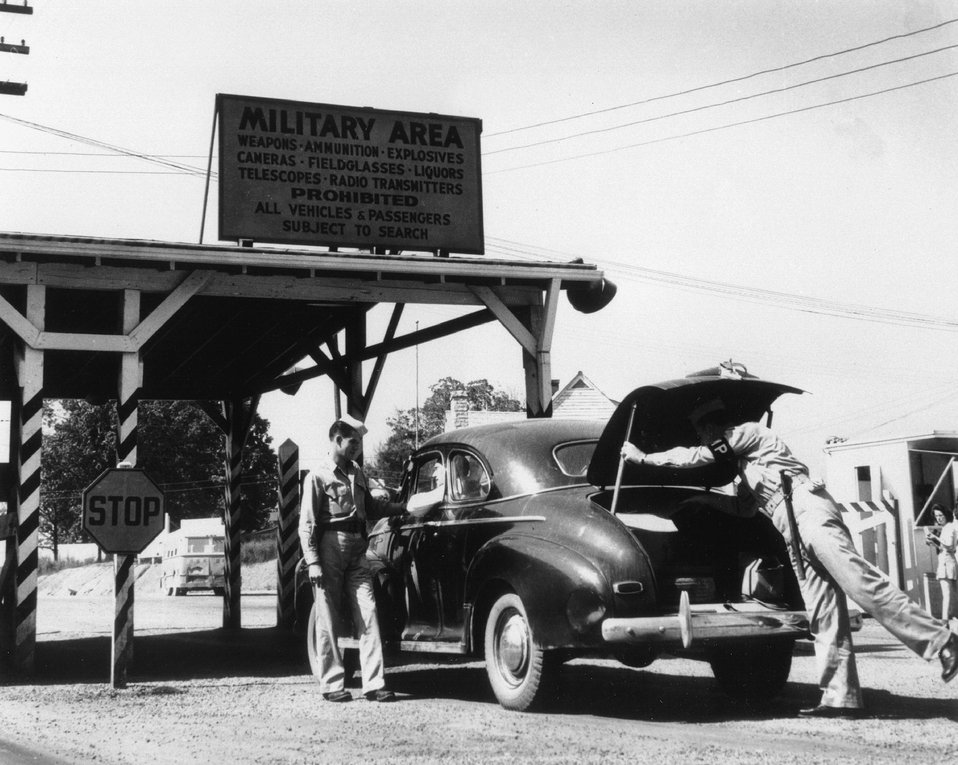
Military police at the Elza Gate. Along the perimeter of Oak Ridge stood a settlement known as Elza. Here, the Manhattan Engineer District set up a guarded entrance to control access. c. 1945